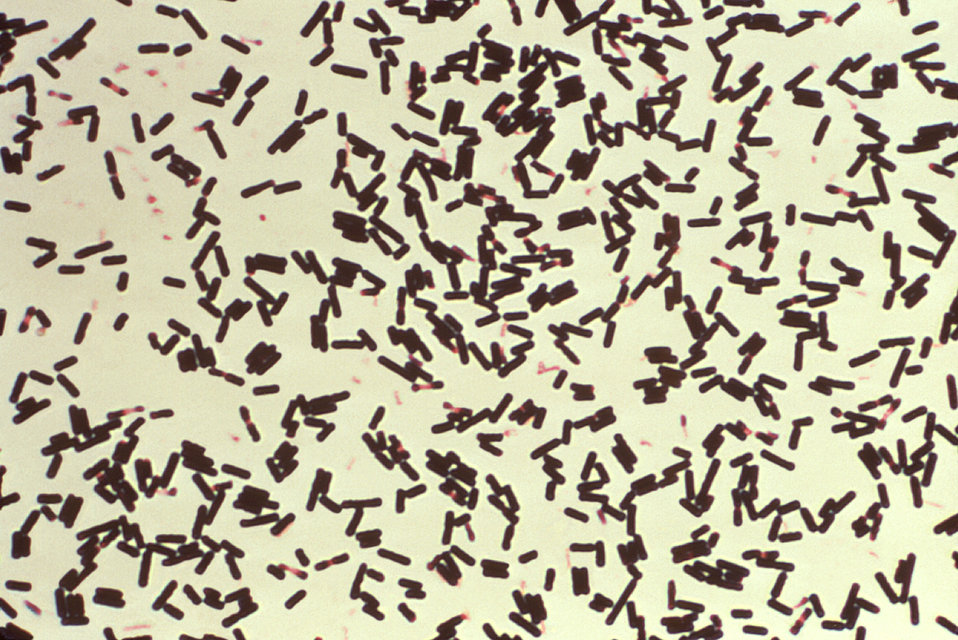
Magnified 1000X, this photomicrograph reveals numbers of Clostridium perfringens bacteria that had been grown in Schaedler's broth, and subsequently stained using Gram-stain.